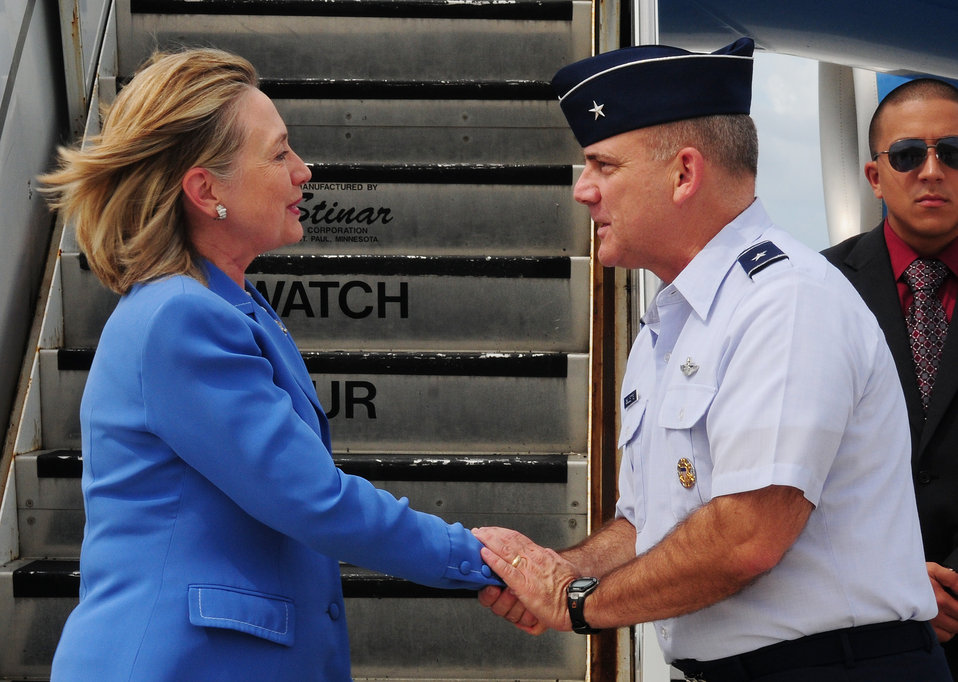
Secretary Clinton Is Greeted By Brig. Gen. Doucette

U.S. Secretary of State Hillary Rodham Clinton is greeted by U.S. Brig. Gen. John Doucette, 36th Wing commander, after arriving at Andersen Air Force Base in Guam on October 29, 2010.